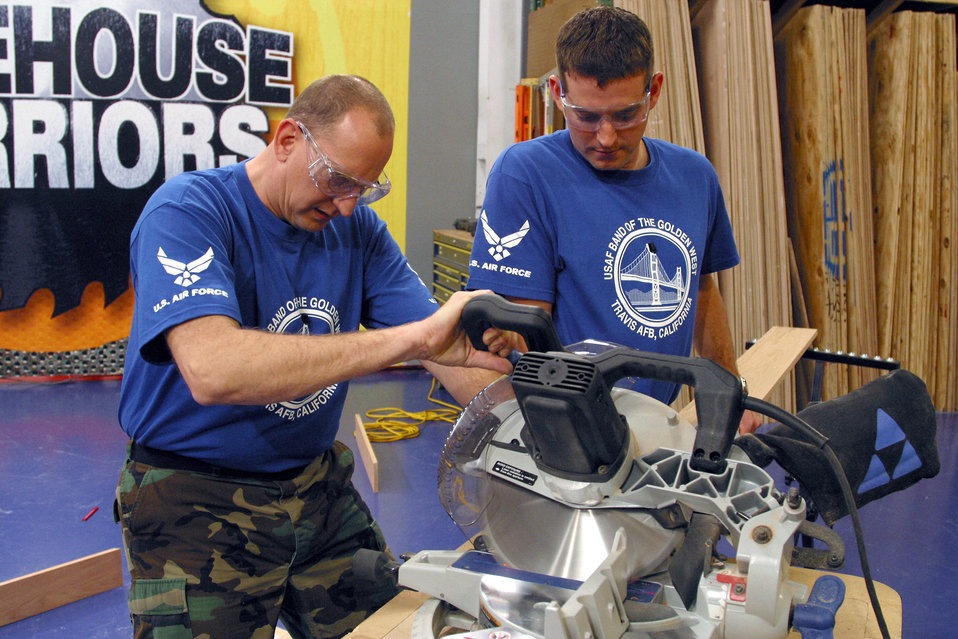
Warehouse Warriors

KNOXVILLE, Tenn. -- Staff Sgt. Jon Ruff, left, and Senior Airman Jim Doyle make an angle cut for the frame of their team’s triangular display case. Ruff and Doyle are members of the U.S. Air Force Band of the Golden West, Travis Air Force Base, Calif. The Band of the Golden West and the U.S. Air Force Band of Mid-America, Scott Air Force Base, Ill., each sent a three-person team here to participate in the Do-It-Yourself Network television show, Warehouse Warriors.